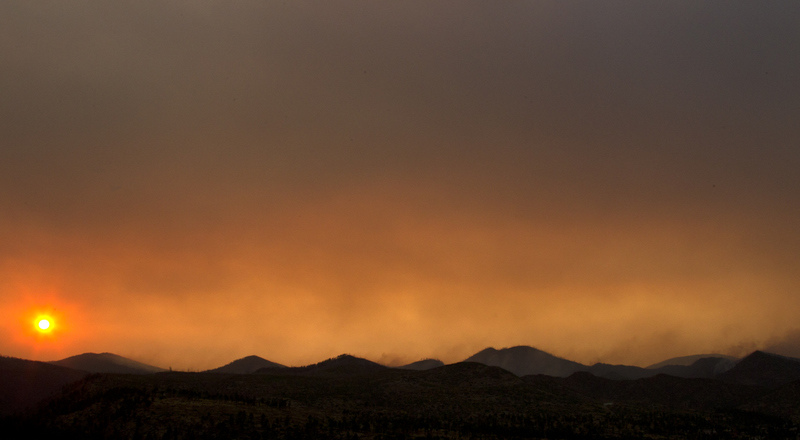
Sunset over scorched Jemez looking west from atop the National Security Sciences Building, Los Alamos National Laboratory, July 6, 2011.

The Las Conchas Fire started on June 26, 2011, it was caused by a fallen tree that caught fire after it came in contact with power lines nearby. The fire had burned over 121,000 acres, including 63 residences. At no time were hazardous materials in danger at Los Alamos National Laboratory. The lab was closed for a week and reopened on July 6th.